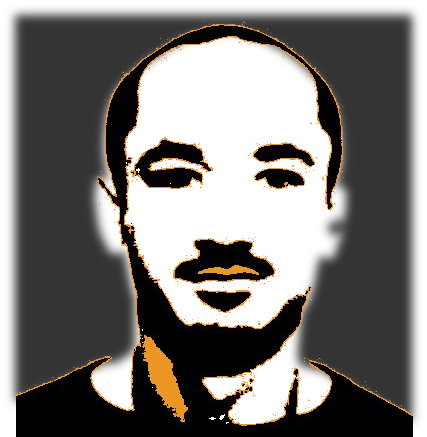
Čeština: uživatel V V user V V